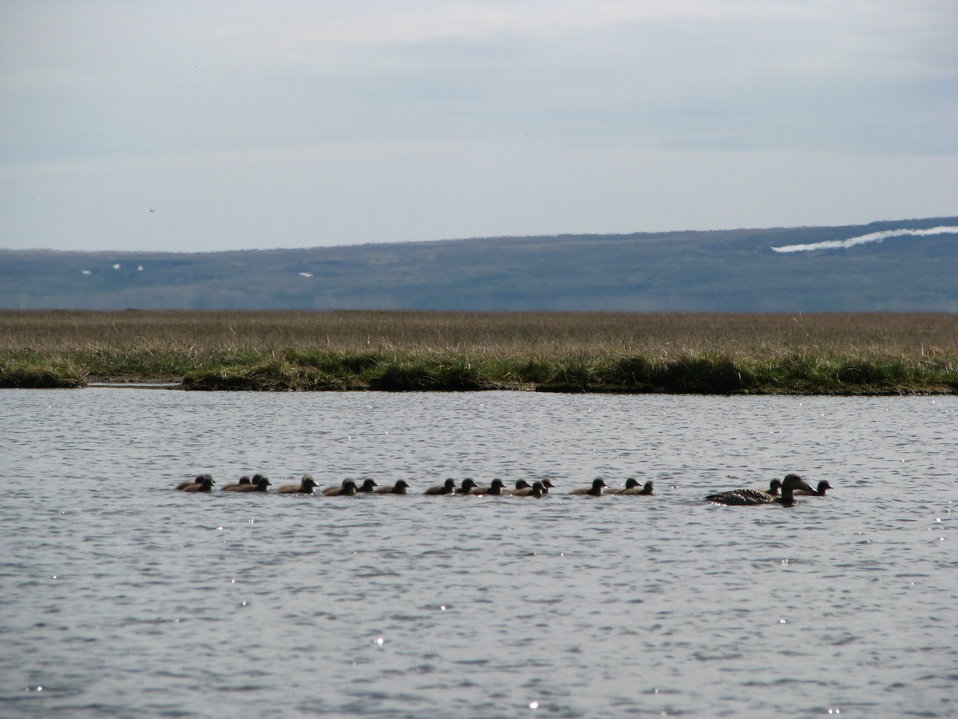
Common eider creche

USFWS Yukon Delta NWR